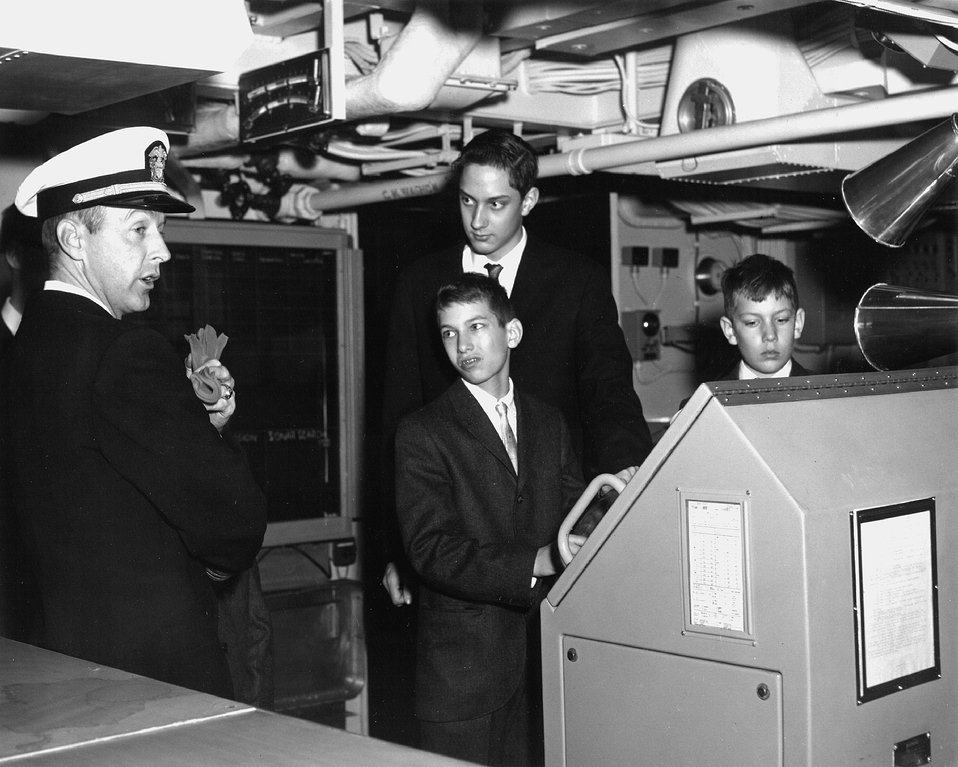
Visit to USS Long Beach (CGN-9), February 24, 1962. Captain E. P. Wilkinson, U.S.N., Commanding Officer. c. 1962